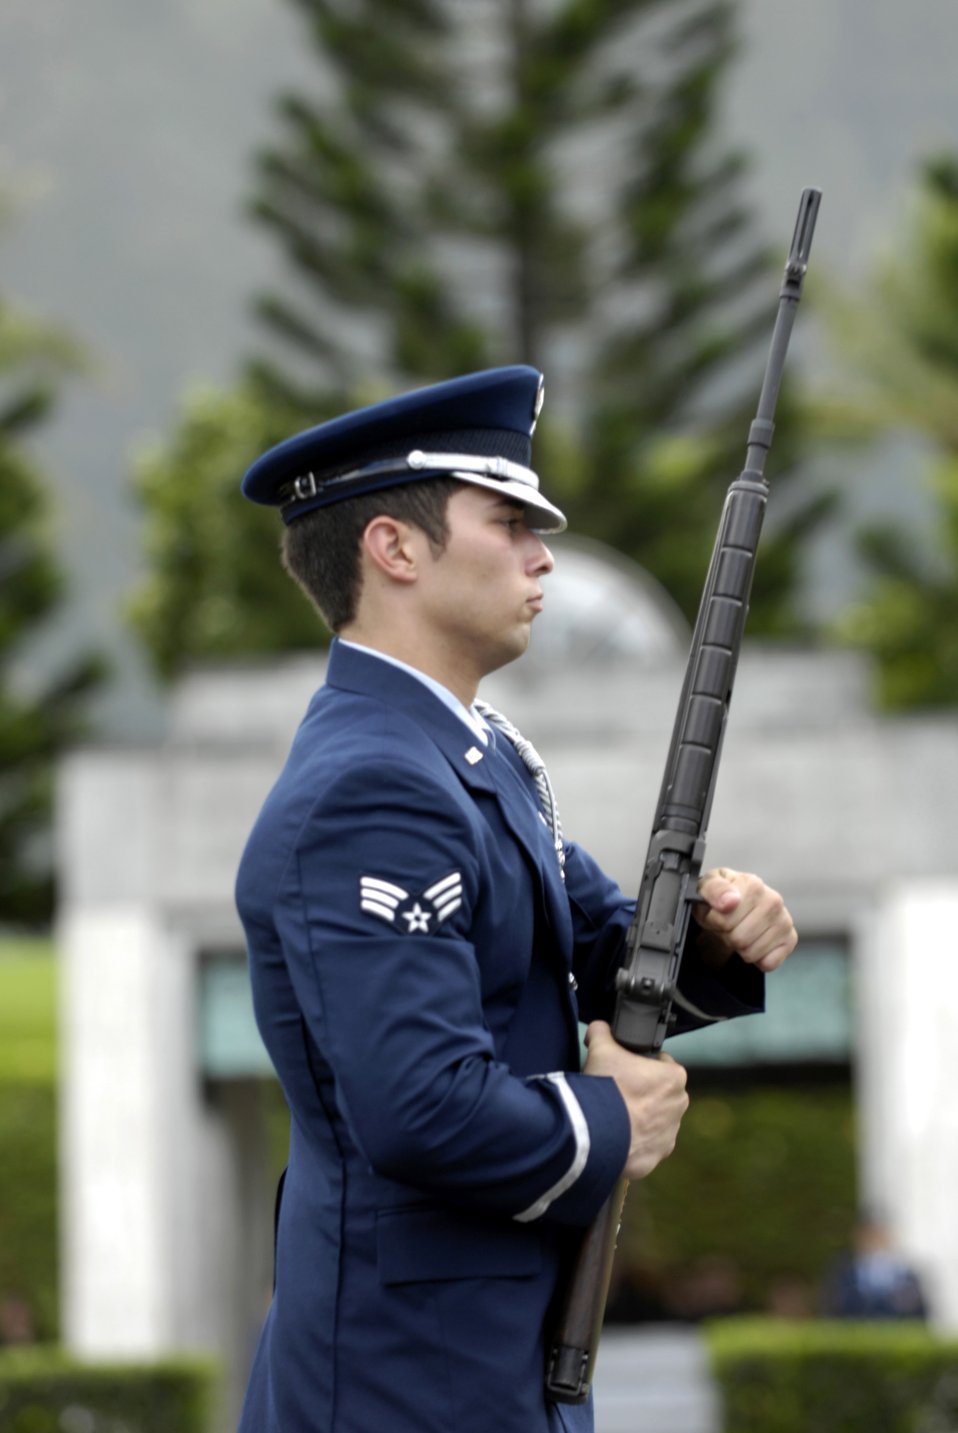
Rendering military honors for a veteran

Senior Airman Patrick Campbell charges his weapon before firing a volley Oct. 26 during a veteran's funeral at Hawaii Veterans Cemetery. Airman Campbell is a member of the 15th Airlift Wing Honor Guard at Hickam Air Force Base, Hawaii. The base honor guard is rendering military honors to the veteran and his family.